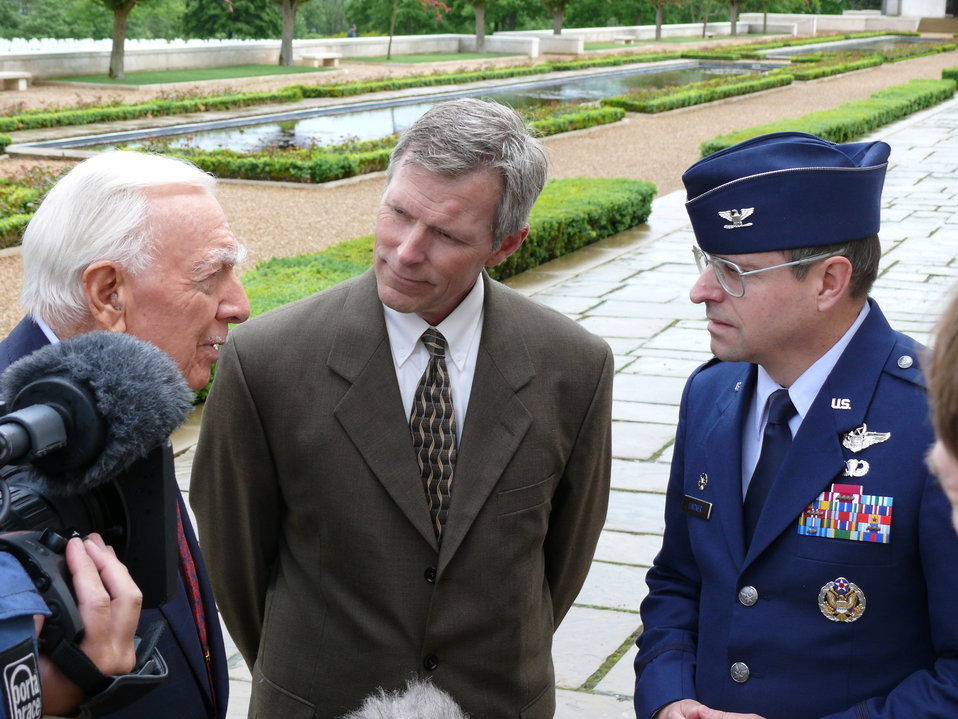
A place for remembrance

Journalist Walter Cronkite (left) tells Col. Blake Lindner and David Bedford a story about the war for a special being taped for PBS May 23 at the Cambridge American Cemetery. The three stand beside the